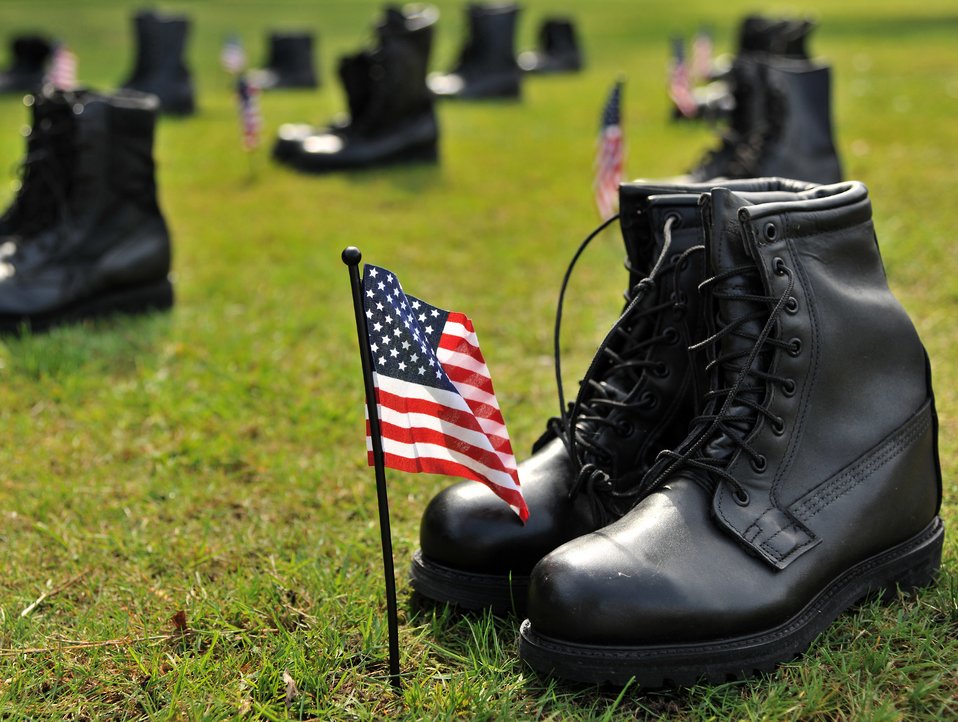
POW/MIA rememberance

Combat boots are placed in formation represent America’s Prisoners of War and Missing in Action Sept. 15, 2011. POW/MIA Remembrance week a time for our nation to remember and pay respect to service members who were prisoners of war or missing in action.